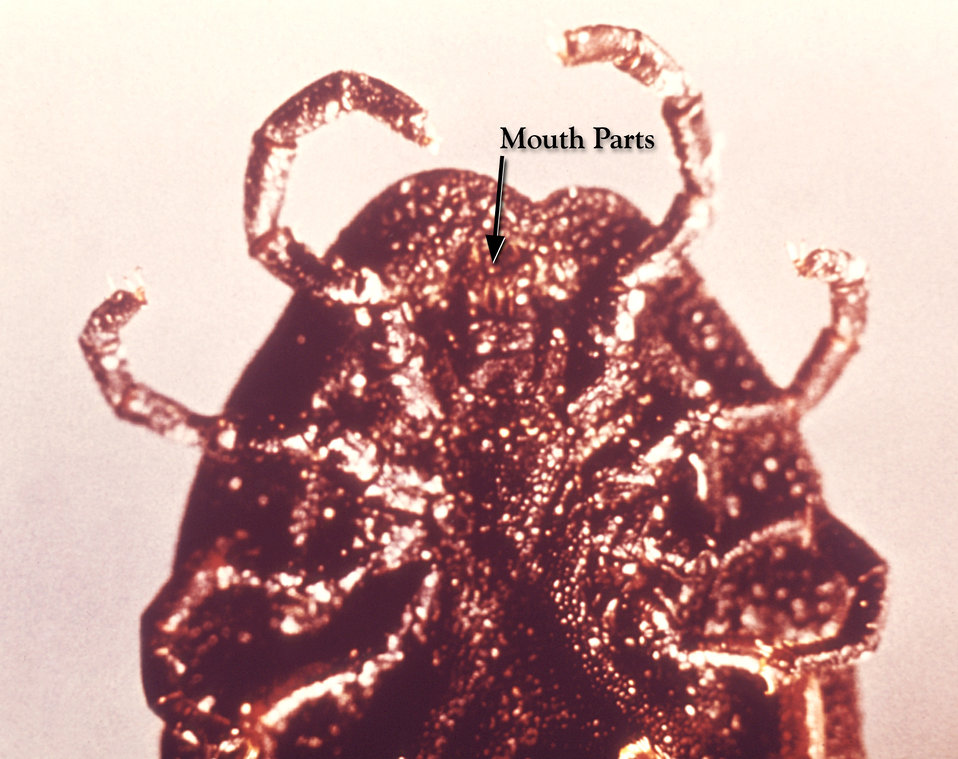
This is a member of the Argasidae family of 'soft ticks', a North American tick with it ventrally located mouth parts.